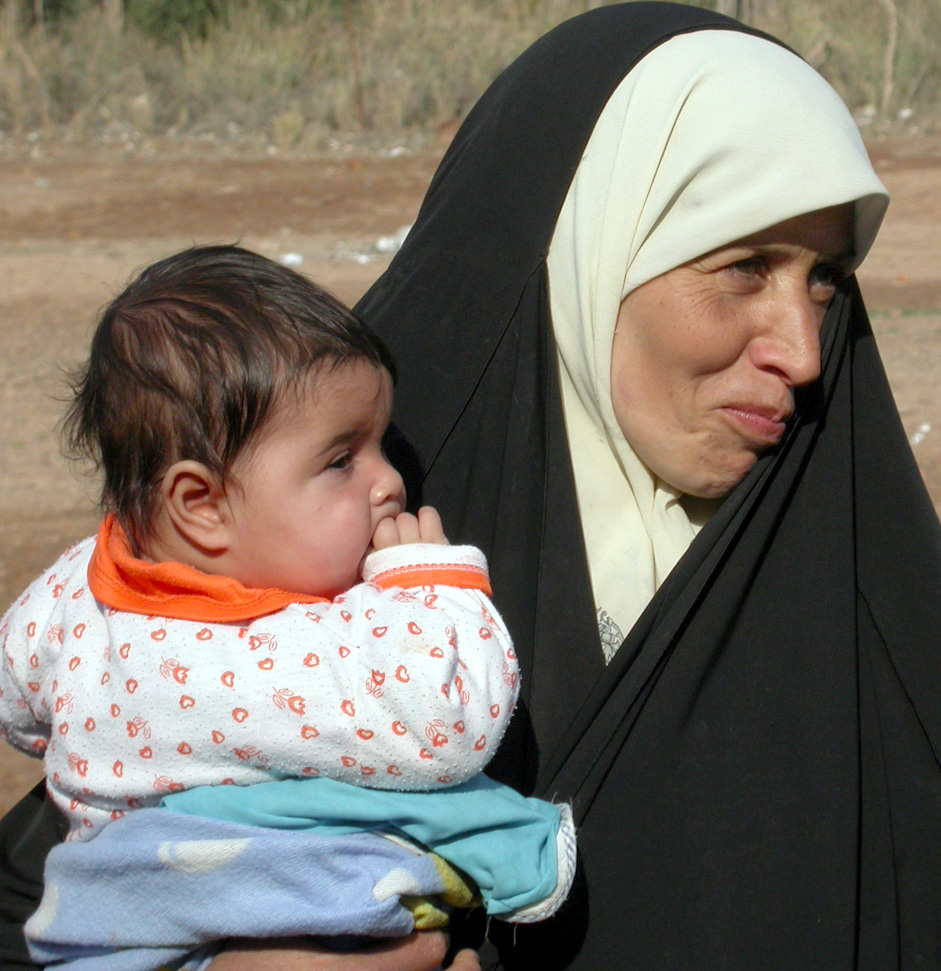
Medics aid villagers

ALBU ASSAD, Iraq -- A village woman waits patiently outside the school house for her child to receive an examination during a medical civil action program visit here by airmen and soldiers. Air Force physicians and technicians joined an Army medical team to provide care to local residents Jan. 4.